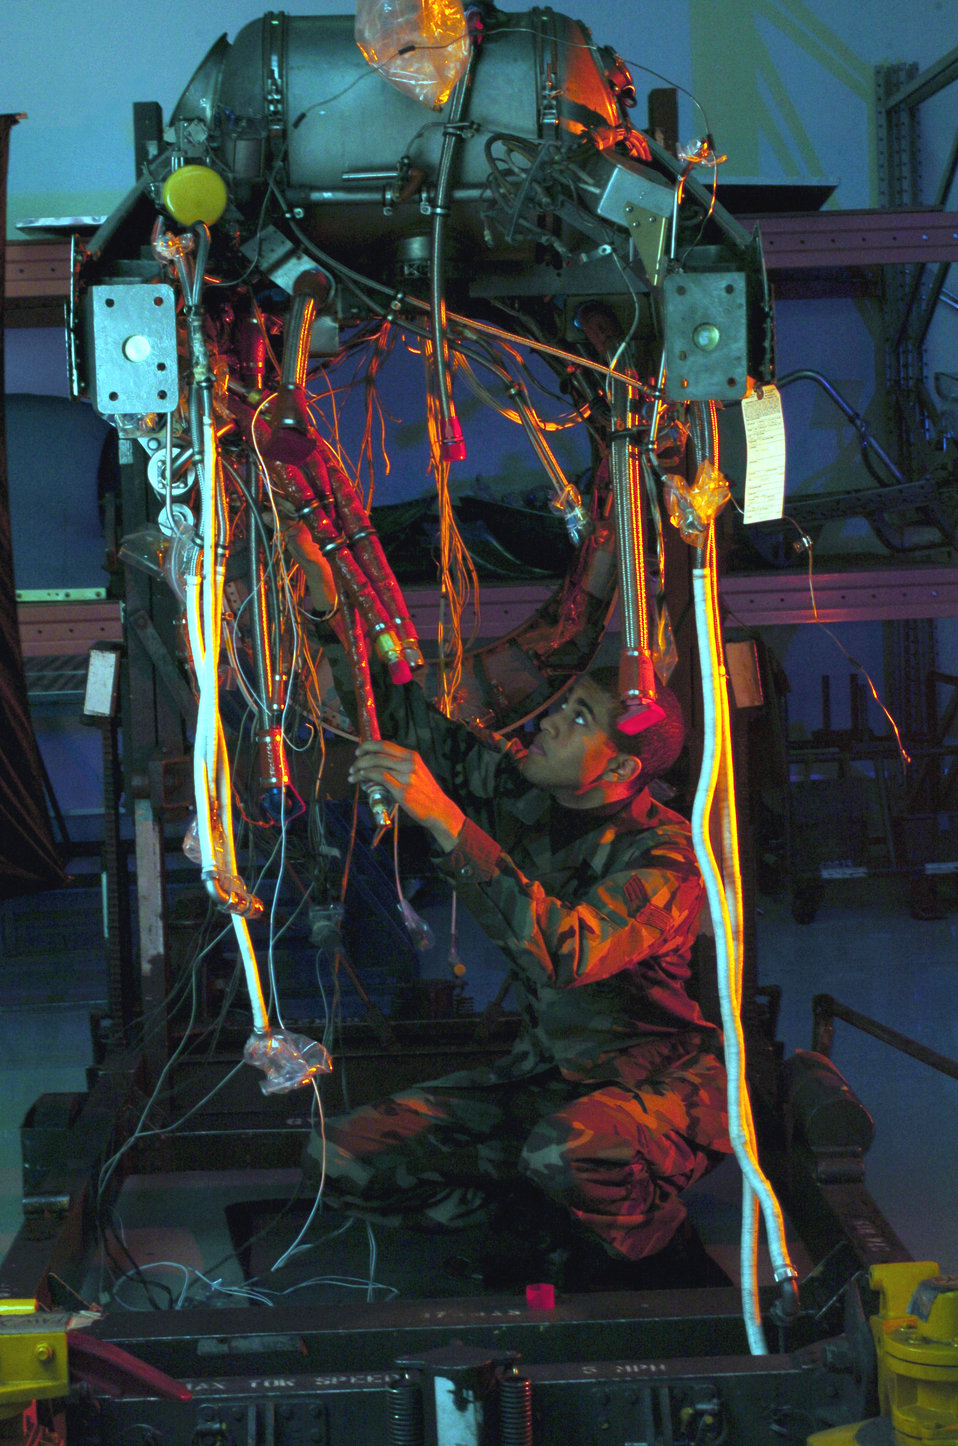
Engine's lookin' good!

YOKOTA AIR BASE, Japan -- Senior Airman Edward Drew performs a routine inspection on a C-130 Hercules engine sub-assembly. Regional repair center workers here inspect and repair all C-130 engines within Pacific Air Forces. Airman Drew is a mechanic with the 374th Maintenance Squadron.